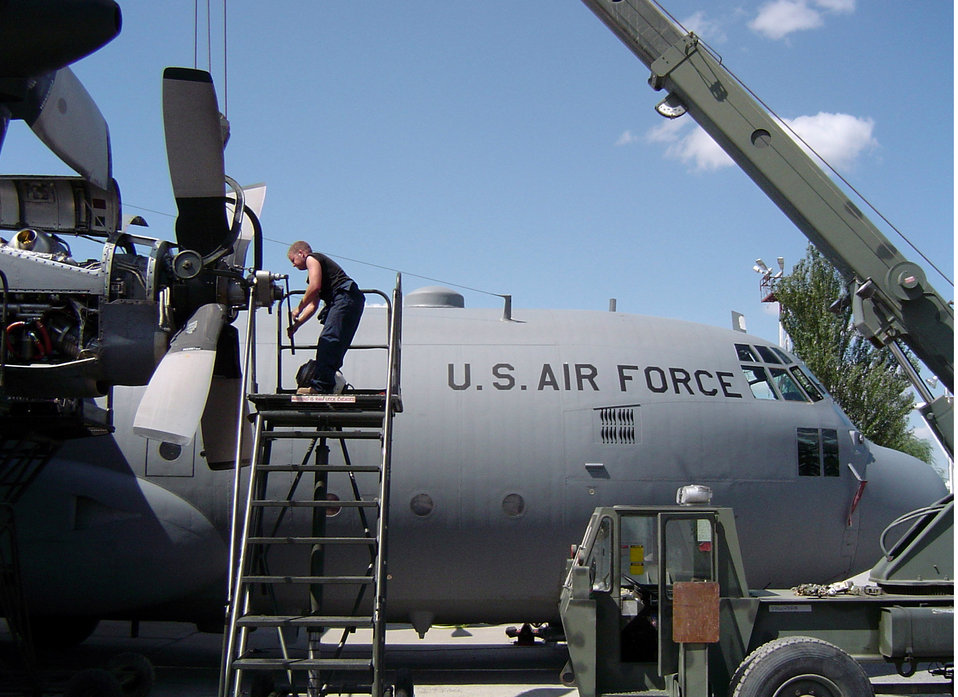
Engine change

MANAS AIR BASE, Kyrgyz Republic (AFPN) -- Staff Sgt. Ross Steffenauer installs a propeller during an engine change here. Airmen and aircraft here from Dyess Air Force Base, Texas, are returning home this week. Dyess C-130s have been deployed nonstop since September 2001.